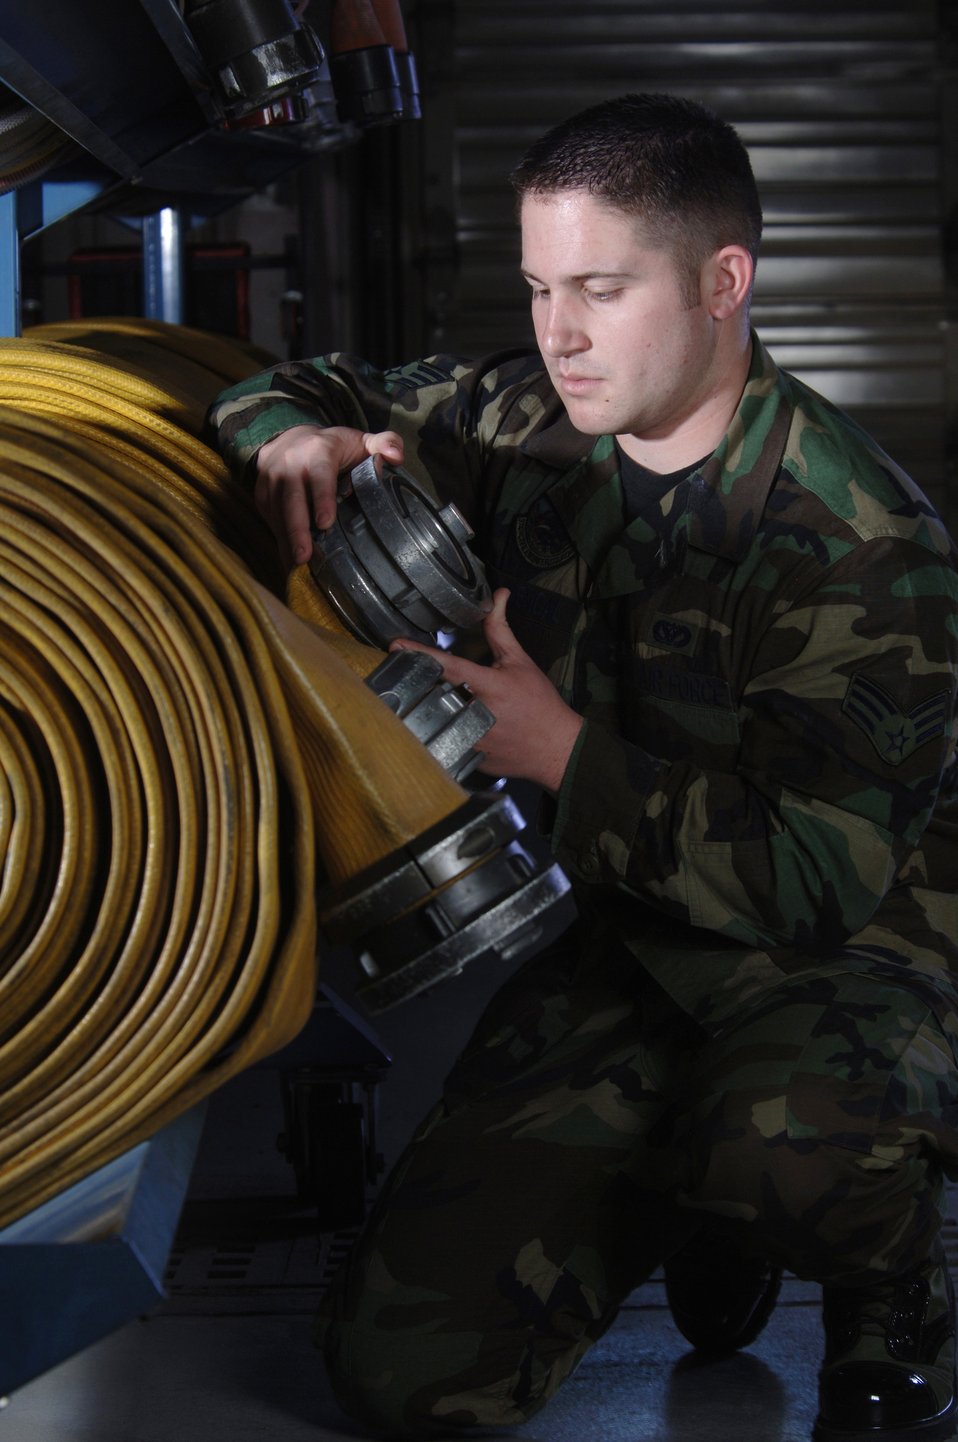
Fighting fire

Senior Airman Christopher Provencal inspects water hoses for defects at Yokota Air Base, Japan, on Friday, April 28, 2006. Airman Provencal is a firefighter with the 374th Civil Engineer Squadron.